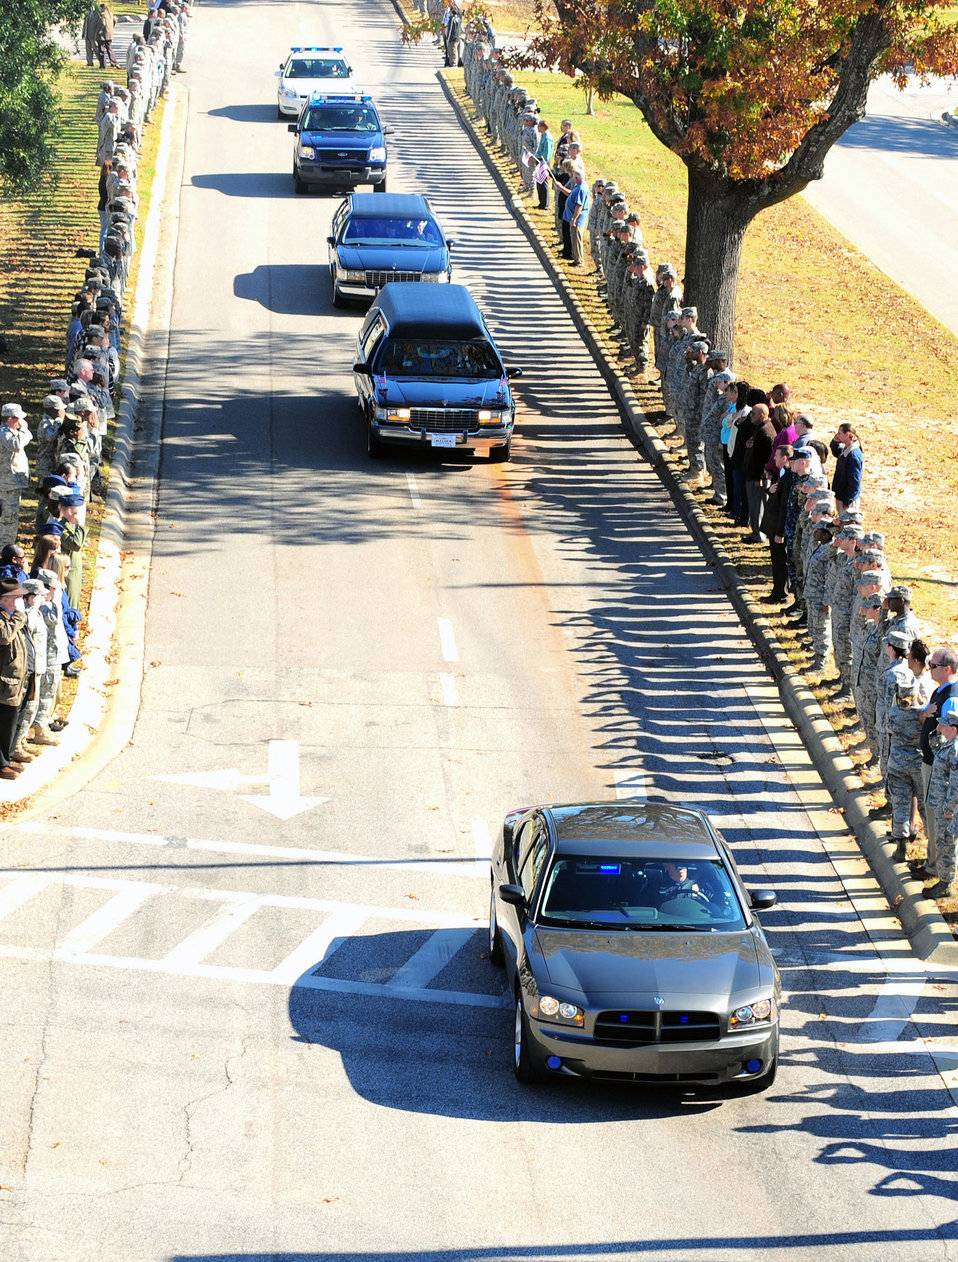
Fallen Airman honored

Thousands of servicemembers lined the streets to pay their last respects to a fallen Airman Nov. 18, 2010, at Shaw Air Force Base, S.C. . Staff Sgt. Andrew Bubacz, a native of Dalzell, S.C., died Nov. 12, 2010, while deployed to Nuristan, Afghanistan on a provincial reconstruction team. Sergeant Bubacz was a 97th Communications Squadron at Altus Air Force Base, Okla.